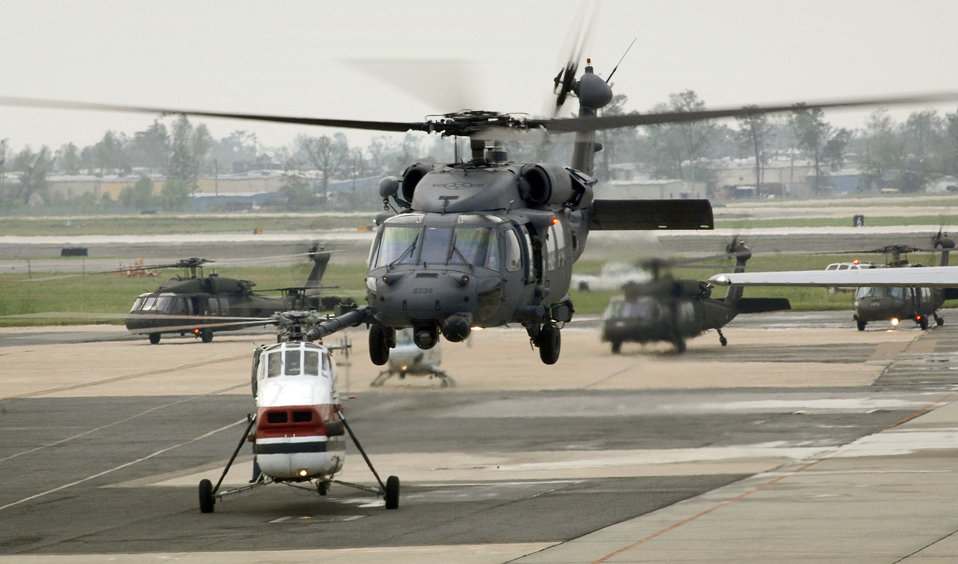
Air Force evacuates the sick and wounded

NEW ORLEANS -- A U.S. Air Force HH-60 rescue helicopter lifts off from the international airport here Sept. 1. Hundreds of sorties were completed by the steady arrival and departure of helicopters, bringing in Hurricane Katrina survivors. Active duty, Guard and Reserve units of the Air Force, Army, Navy and Coast Guard, along with civilian aircraft supported the air evacuation of ambulatory and critical care patients to the airport.